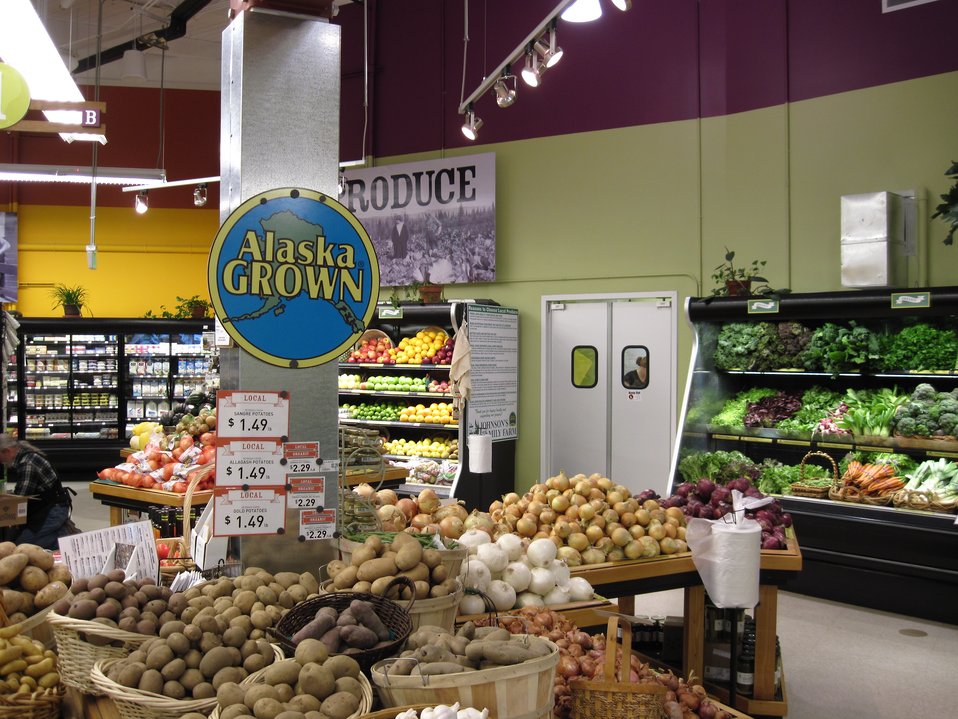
Fairbanks Coop Market 4

The produce section at the new cooperative market is Alaska’s first member-owned community grocery store is open for business and is filled with fresh, healthy food. The Fairbanks Community Cooperative Market was partially funded by the U.S. Department of Agriculture (USDA) Rural Development (RD) Rural Economic Development Loans and Grants (REDLG) program.